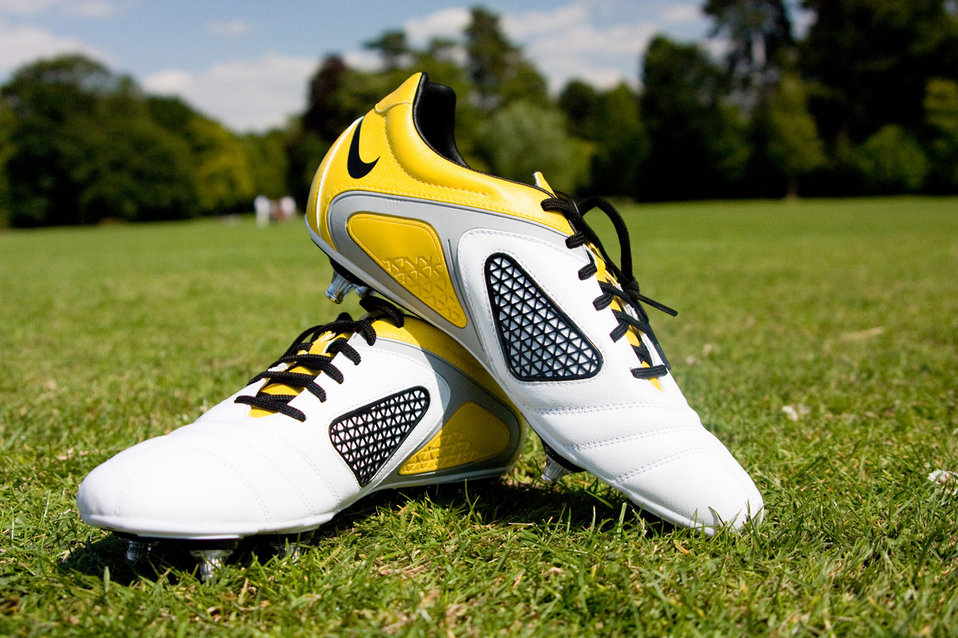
Football boots.